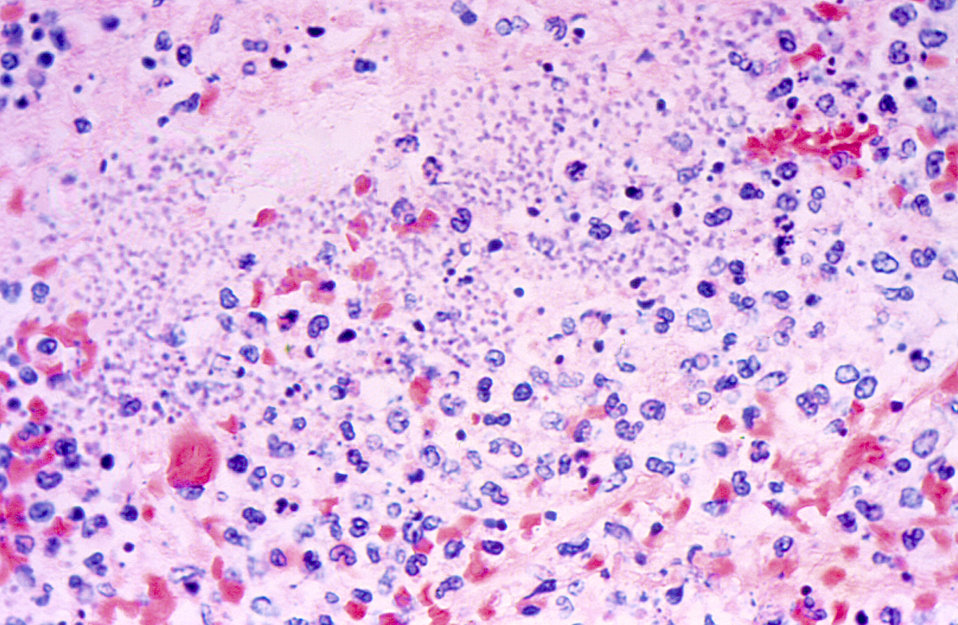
Photomicrograph of lung tissue revealing Yersinia pestis organisms.